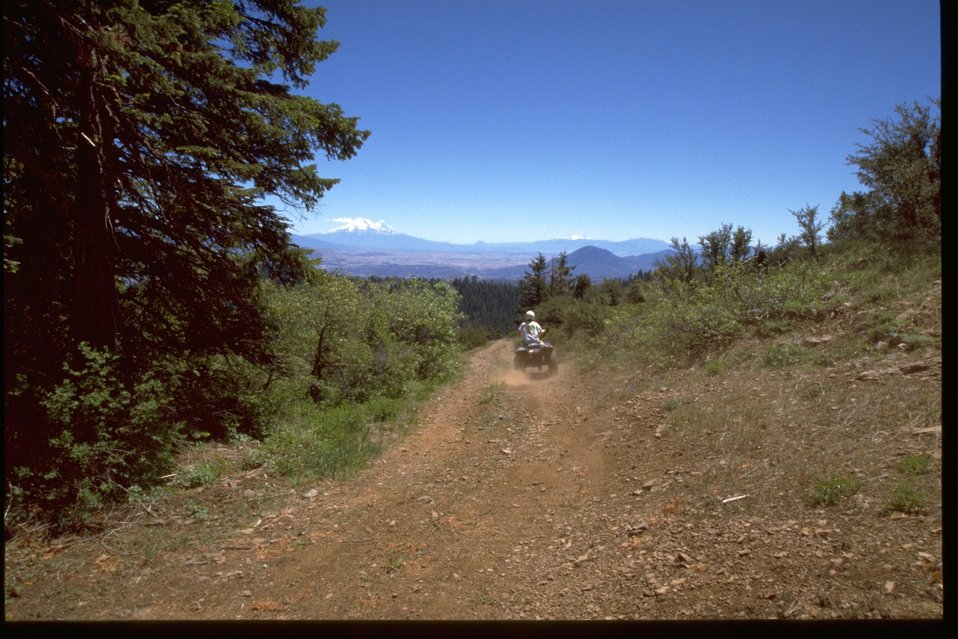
ATV rider on an off road vehicle.